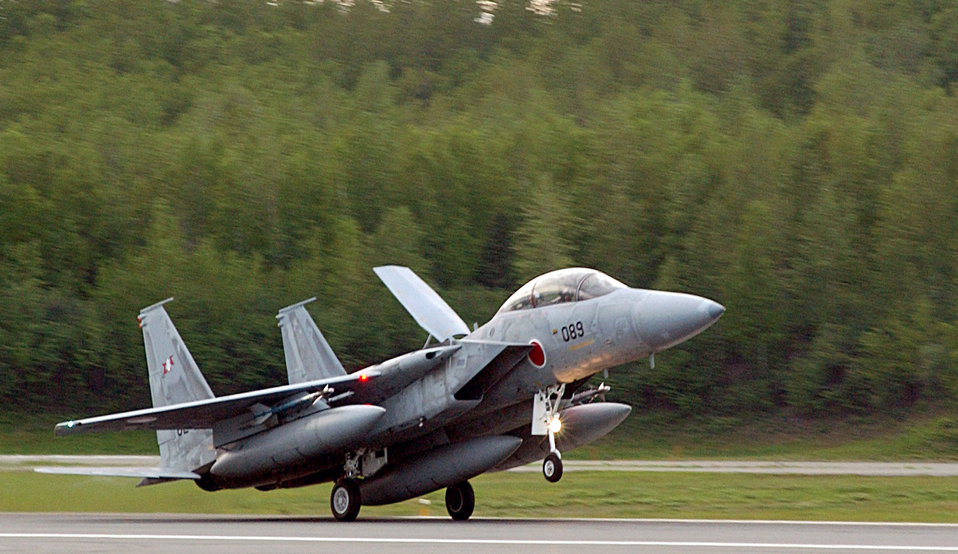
The eagle has landed

ELMENDORF AIR FORCE BASE, Alaska -- A Japanese Air Self Defense Force F-15J Eagle arrives for Cooperative Cope Thunder May 27. The exercise marks the first time fighters from the JSDAF deployed to North America for an exercise. Cooperative Cope Thunder is a Pacific Air Forces-sponsored air combat training exercise set for June 5-20. More than 1,675 people will participate at Elmendorf and Eielson Air Force Bases, including approximately 980 U.S. service members and 695 service members from Thailand, Singapore, the Republic of Korea, India and NATO. About 275 members from the JASDF will participate.